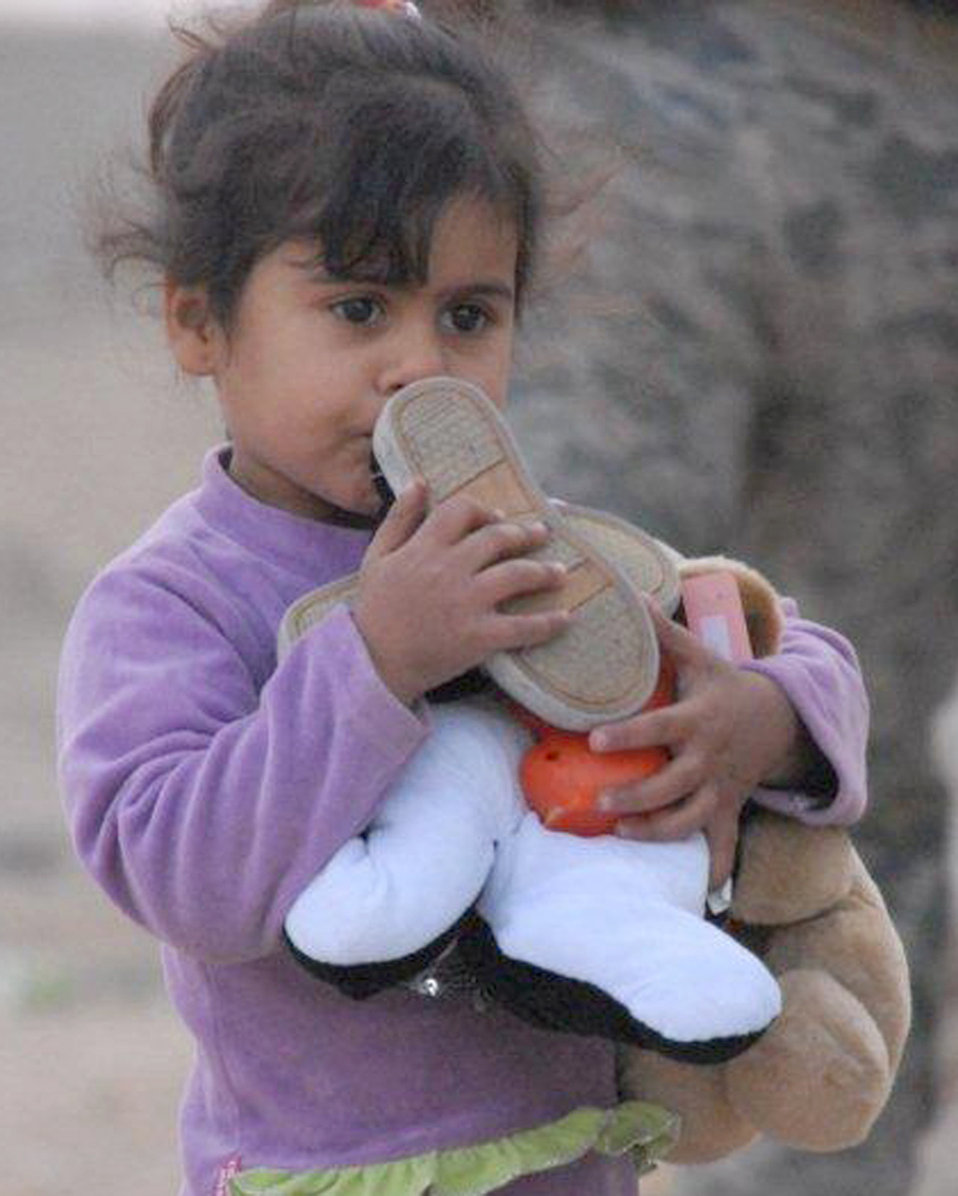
Service members give gifts to children

An Iraqi girl hugs the toys and shoes she received from the Echelon Above Division-Advise and Train team Dec. 16, 2010, at Ur Elementary School near Tallil Air Base, Iraq. Airmen assigned to the EAD-AT team handed out school supplies and toys to more than 70 children.